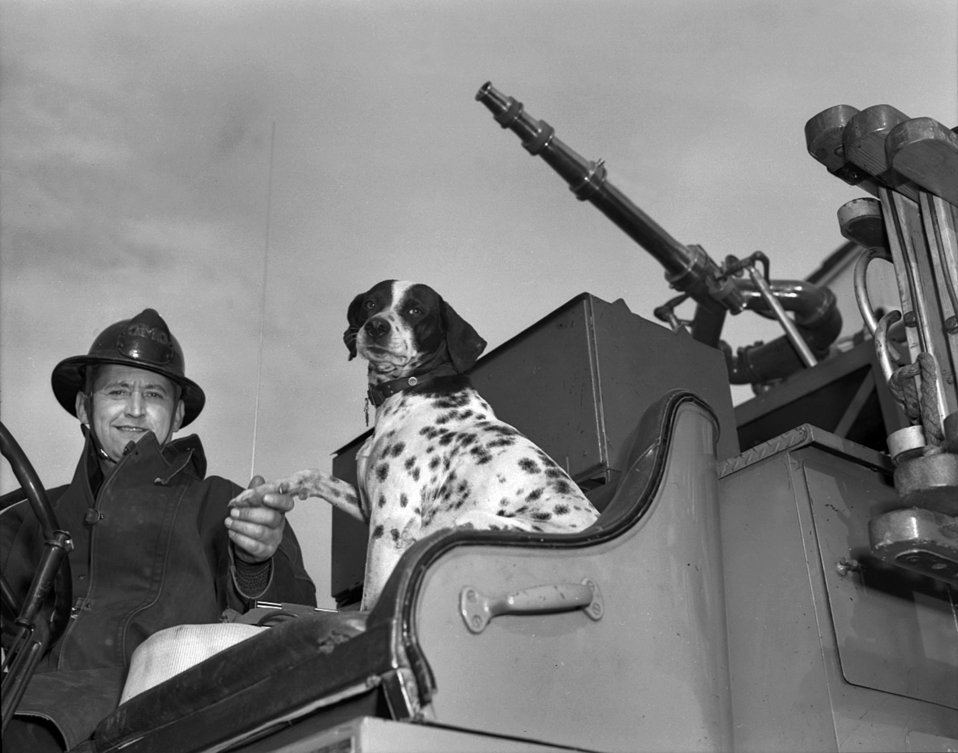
Chief and Dog Fire Hall No. 4 Oak Ridge

004053-6 DOE photo by Ed Westcott

Oak Ridge Tennessee 12/4/1947